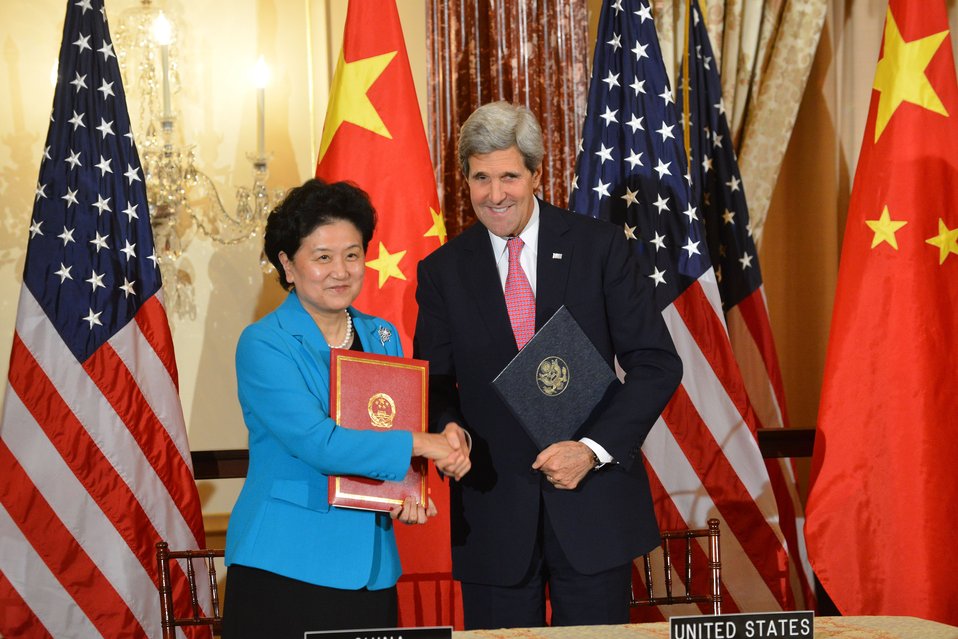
Secretary Kerry and Chinese Vice Premier Liu Yandong Shake Hands

U.S. Secretary of State John Kerry and Chinese Vice Premier Liu Yandong shake hands after signing an updated Memorandum of Understanding for continuation of the U.S.-China High-Level Consultation on People-to-People Exchange (CPE) at the U.S. Department of State in Washington, D.C., on November 21, 2013.